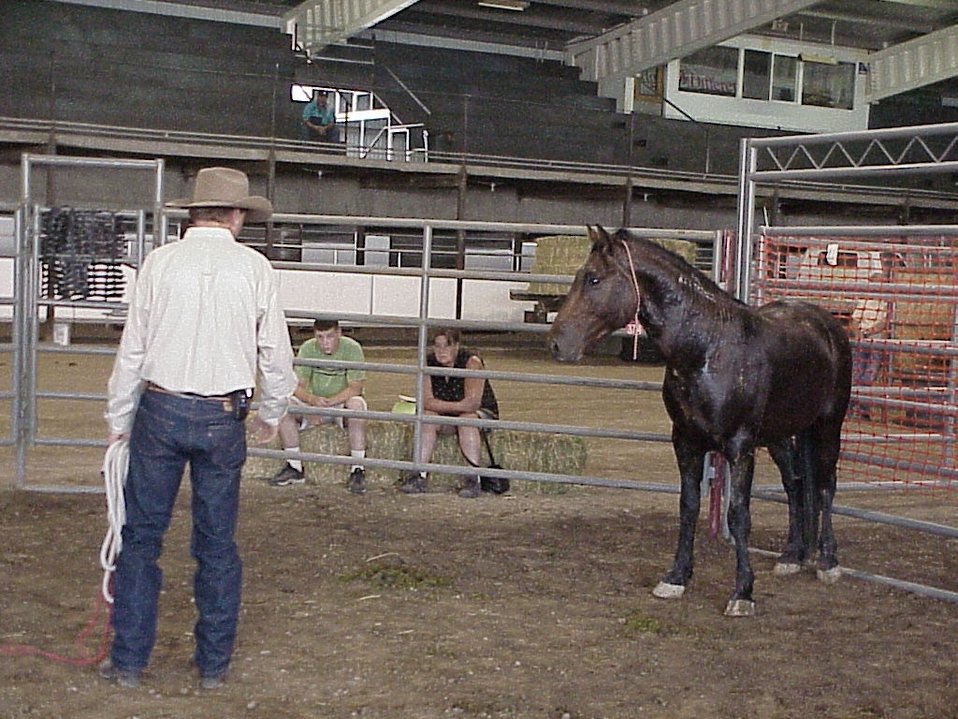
Horse Gentler Mario Johnson Lewiston Wild Horse and Burro Adoption Program Auction WHB indoor auction Cottonwood Field Office UCSC Upper Columbia Salmon Clearwater District